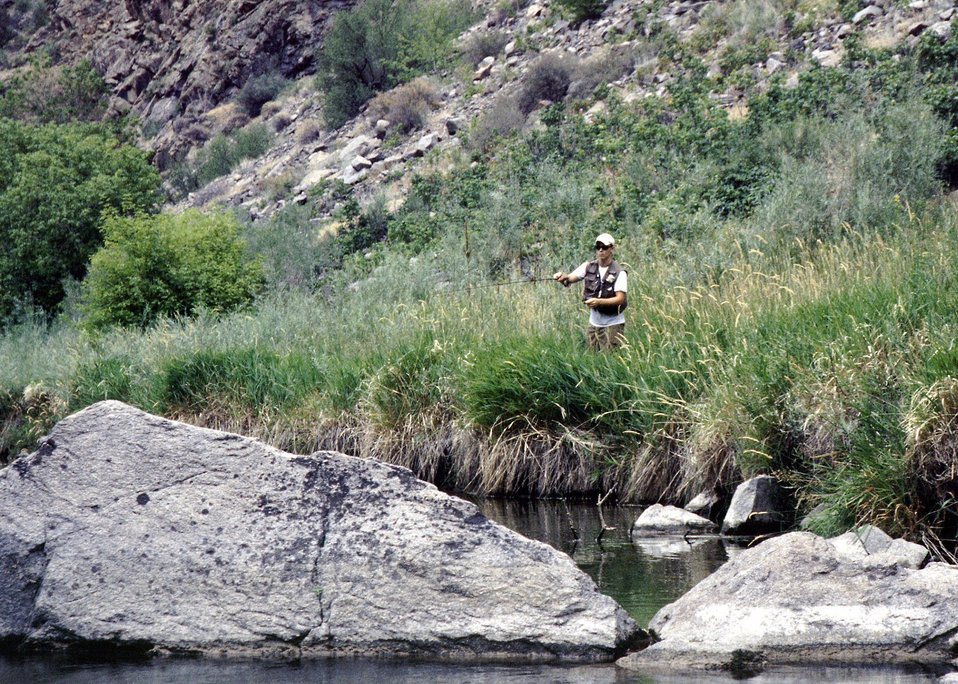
Fishing